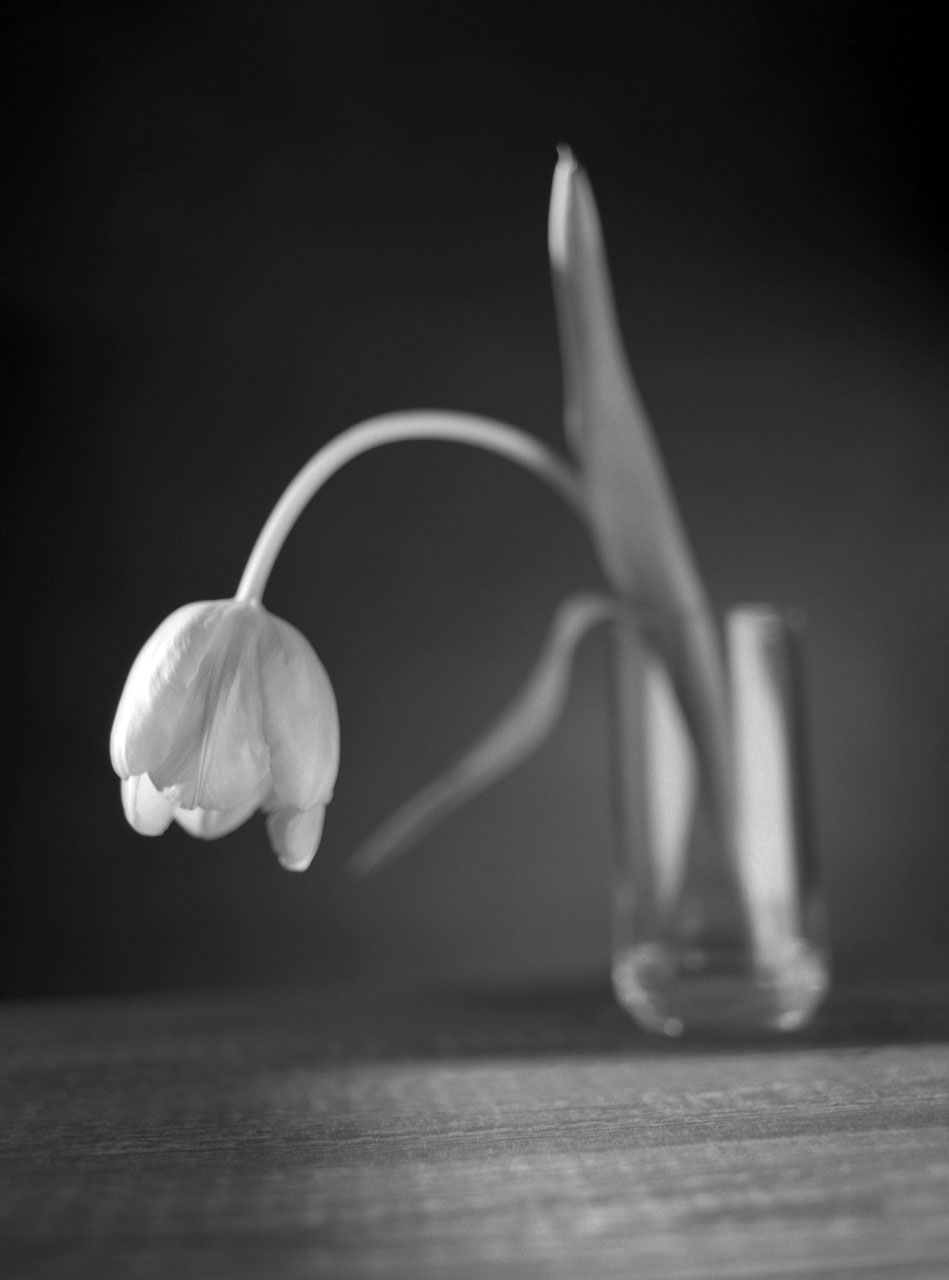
Tulip in black and white.